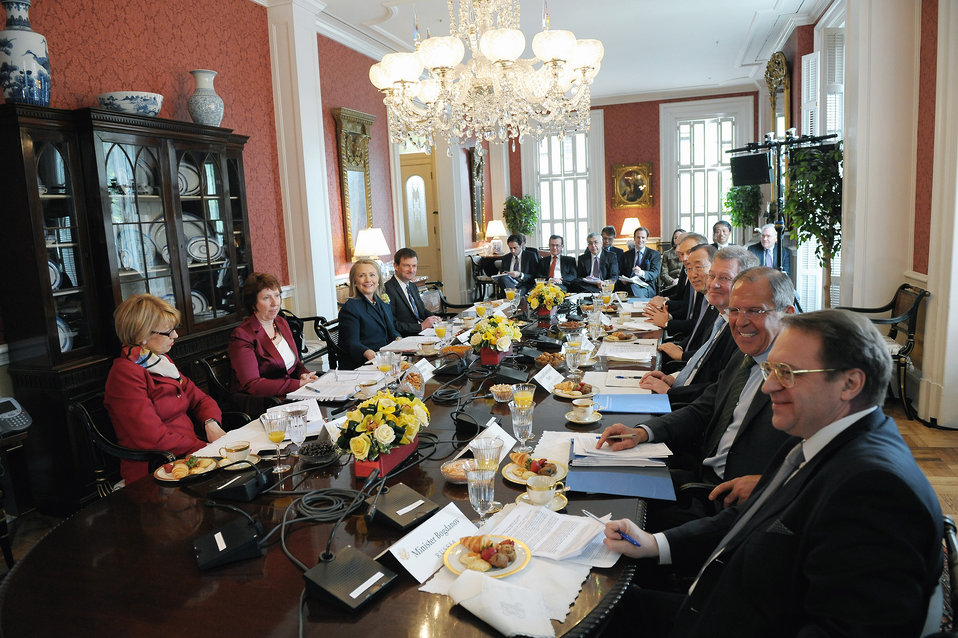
Secretary Clinton Hosts Middle East Quartet Meeting

U.S. Secretary of State Hillary Rodham Clinton hosts Middle East Quartet Meeting in the Jackson Place Conference room at the Blair House in Washington, D.C. on April 11, 2012.